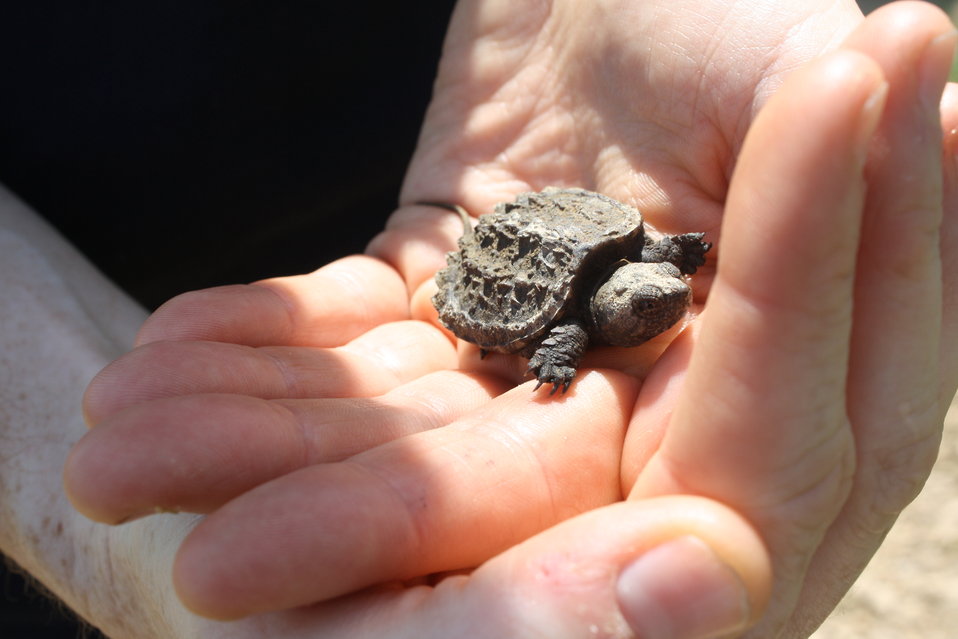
Year of the Turtle

A juvenile snapping turtle from the South River in Virginia.